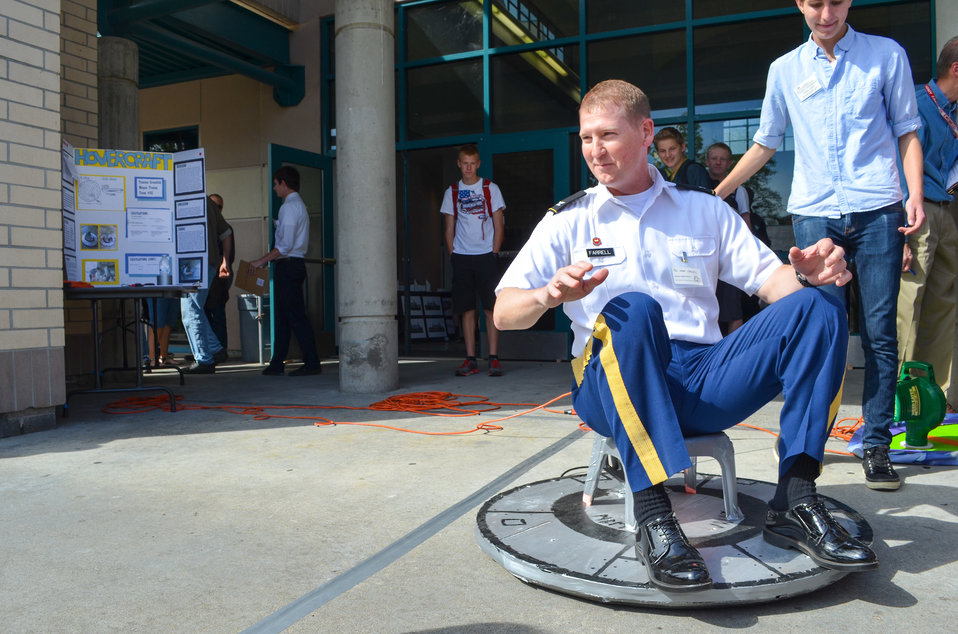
Colonel Mike Farrell rides a hovercraft

U.S. Army Corps of Engineers Sacramento District commander Col. Mike Farrell takes a turn on a student-built hovercraft during Folsom High School's seventh annual Engineering Challenge April 11, 2014, in Folsom, Calif. Student projects included: hovercrafts, catapults, Tesla coils, electromagnetic propulsion devices, pneumatic wind turbines, voice synthesizers, hydrogen fuel cells, solar electric boats and cars, gene transformation, and orthopedic implants.